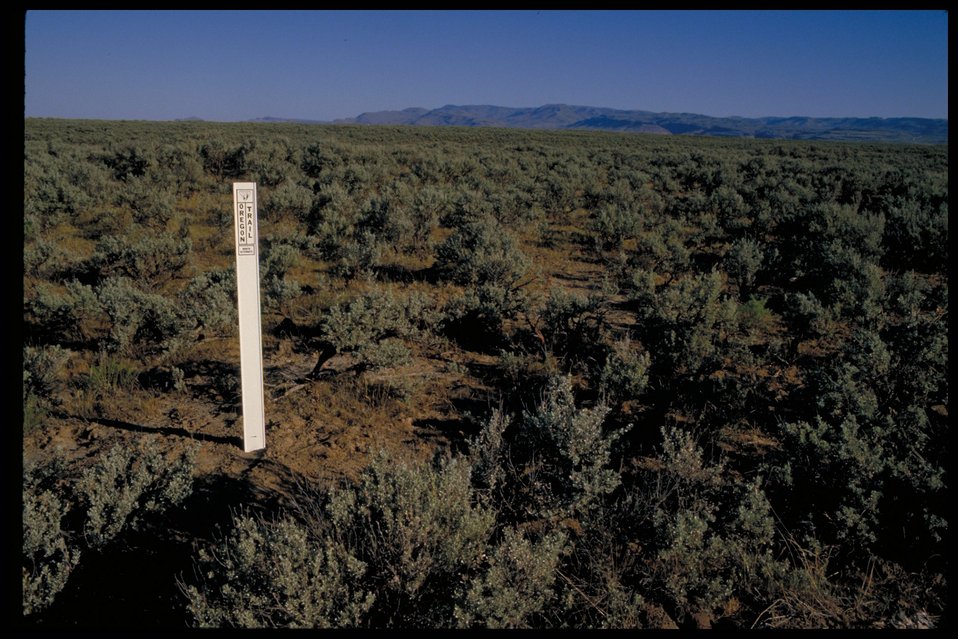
Oregon Trail south of Emigrant Trail Res. Lower Snake River District